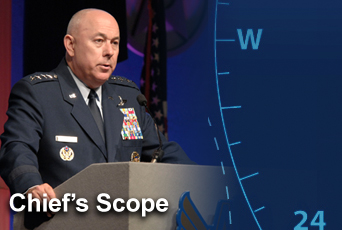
Chief of staff launches new Web site

The Chief's Scope is designed to briefly highlight current topics Air Force Chief of Staff Gen. T. Michael Moseley feels are important to America's Airmen.